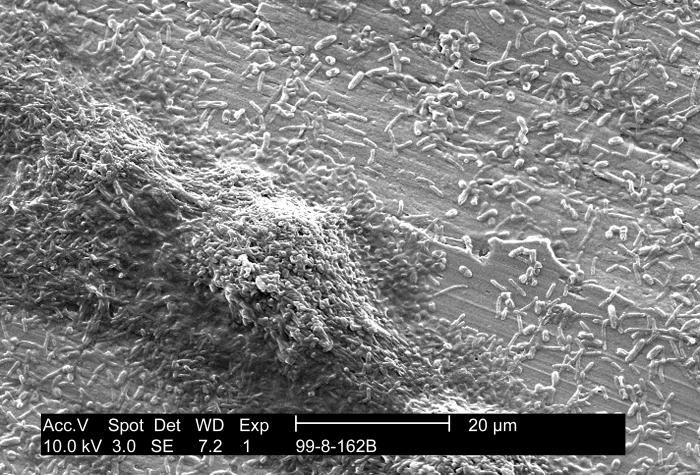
This scanning electron micrograph (SEM) depicts findings uncovered during Legionella pneumophila research, which investigated the association of amoebae when present with L. pneumophila bacteria existing on potable water biofilms.